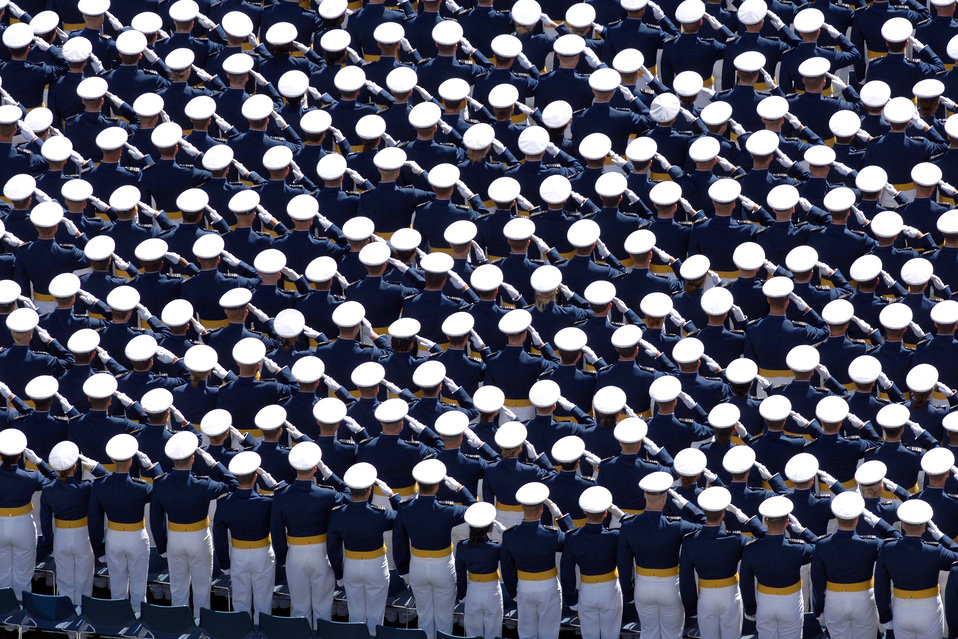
On to bigger things

Members of the U.S. Air Force Academy Class of 2007 salute during the playing of the national anthem during the commencement ceremony May 30 in Colorado. The ceremony marks the culmination of four years at the academy and their transition from cadets to the Air Force's newest second lieutenants.